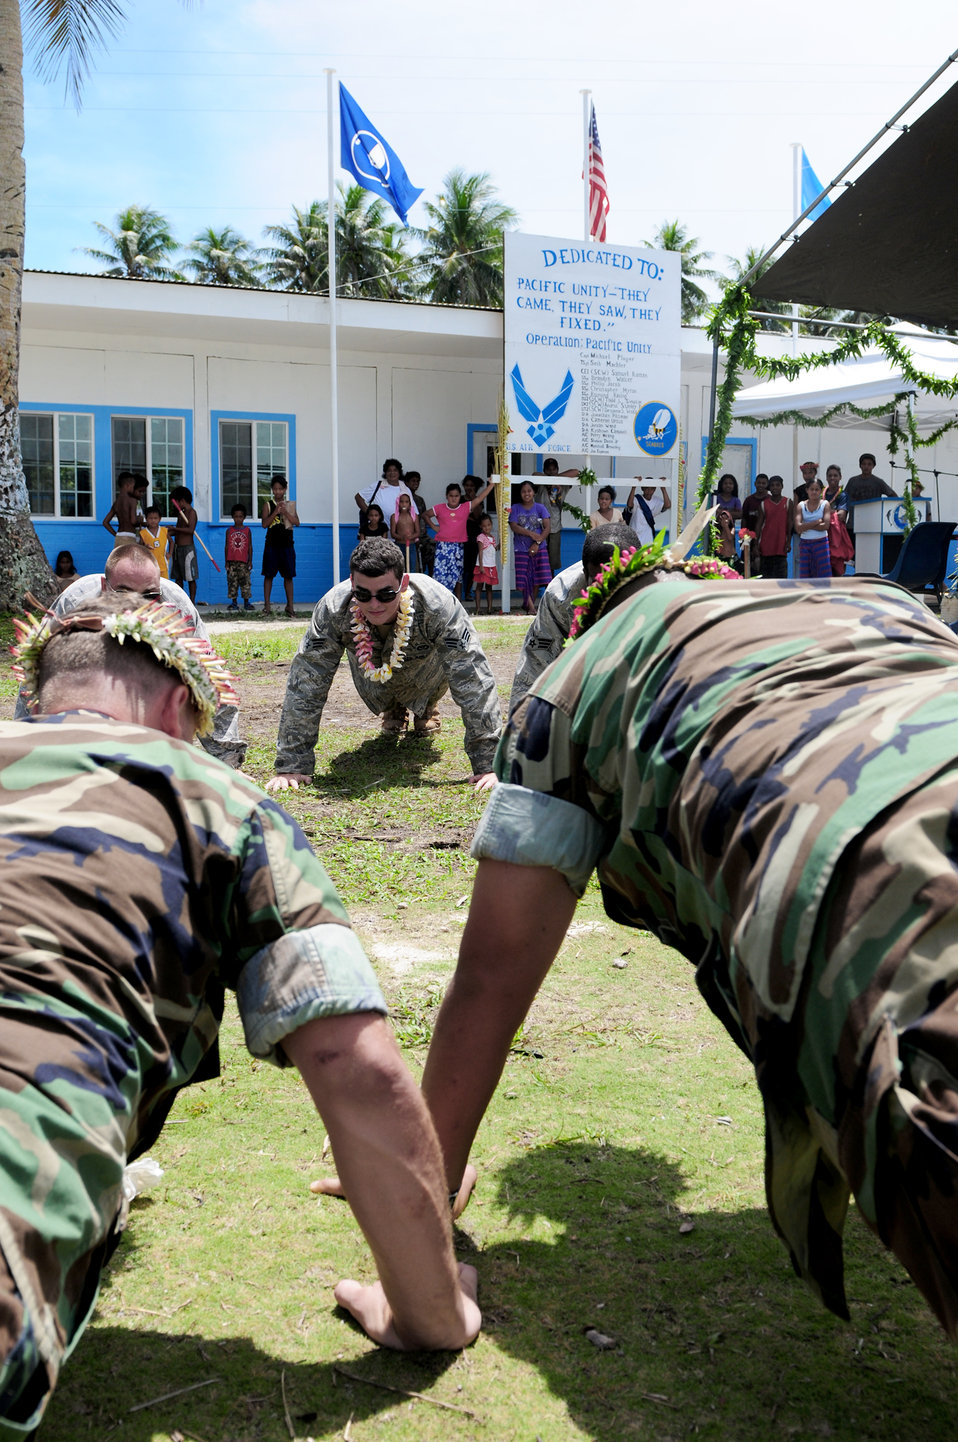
One month of construction

U.S. Air Force civil engineers from Yokota, Japan, and U.S. Navy Seabees from San Diego, Calif., gather Sept. 22, 2010, for their last tribute to the islanders of Yap, Federated States of Micronesia, as they perform group push-ups during Pacific Unity 2010. Pacific Unity 2010 is a humanitarian civil engineering effort in which civil engineers completely rebuilt, remodeled and repainted a high school on a remote island in Micronesia.